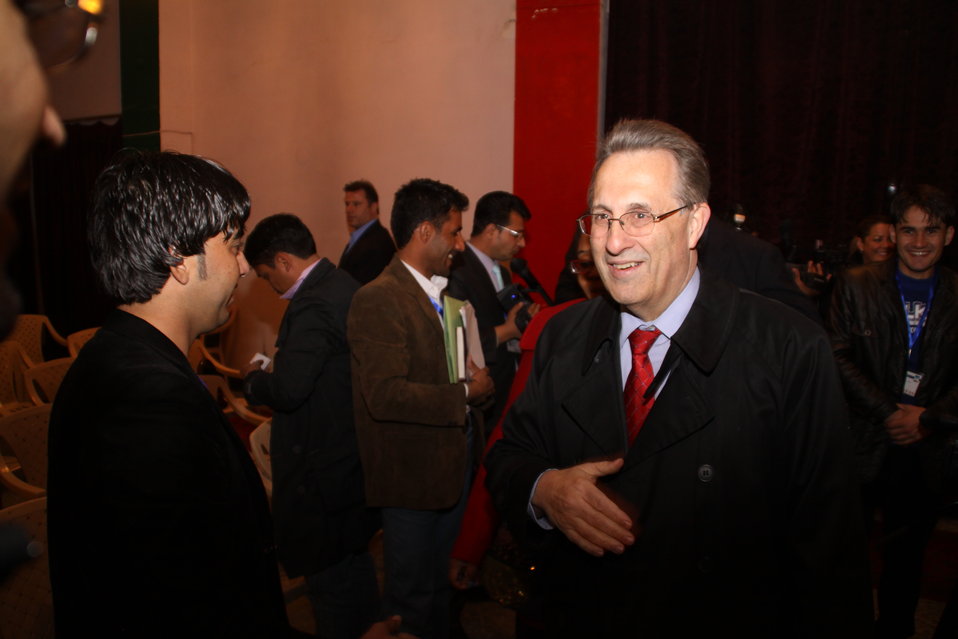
U.S. Ambassador E. Anthony Wayne